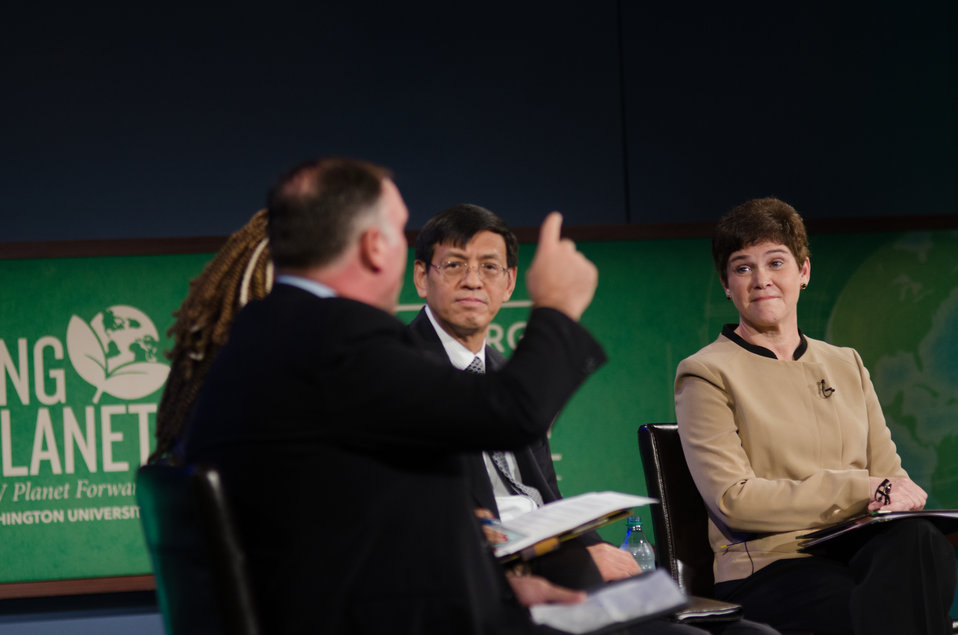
Shenggen Fan, Ph.D. Director General, International Food Policy Research Institute and Krysta Harden, Deputy Secretary of Agriculture, listen to Jose Andres, Chef/Owner of ThinkFoodGroup, Founder of World Central Kitchen, and Culinary Creator and Advocate on the discussion panel “Policy, Palate, and the Plate-Innovation and how policy can impact practice at the Feeding the Planet Summit of leaders from agriculture, business, finance, academia, Non Governmental Organization, government and media, along with a large contingent of college students to engage around promising innovations in global agriculture and food security. The Summit spotlights transformation and scalable developments in policy, practices and technologies with special attention to related issues of gender, climate change and urbanization at The George Washington University in Washington, DC, on Wednesday, Oct. 31, 2013.